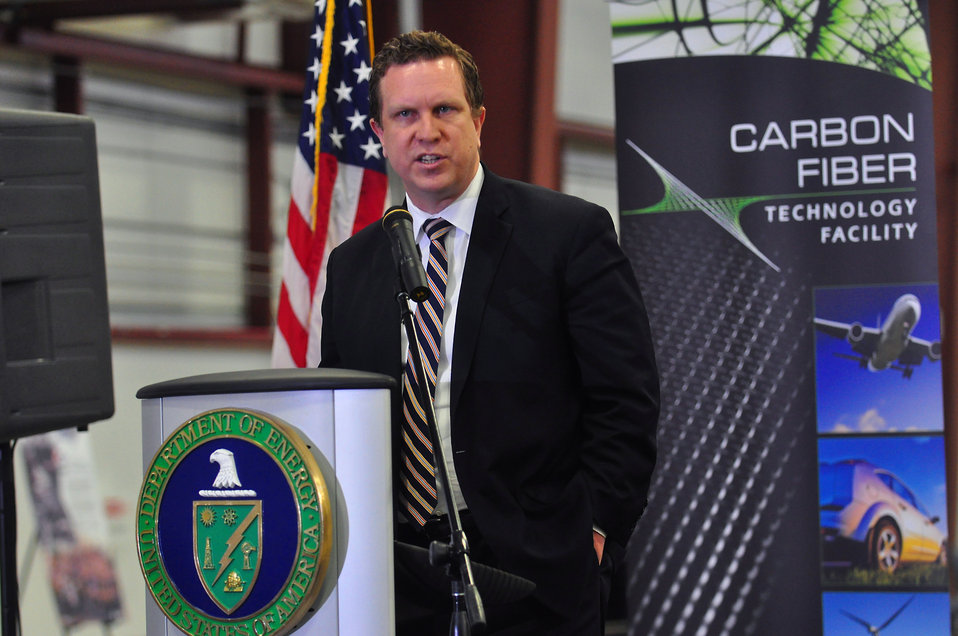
Carbon Fiber Technology Facilty Open House Oak Ridge Tennessee

13-025 DOE photo Lynn Freeny
Assistant Secretary for Energy Efficiency and Renewable Energy David Danielson